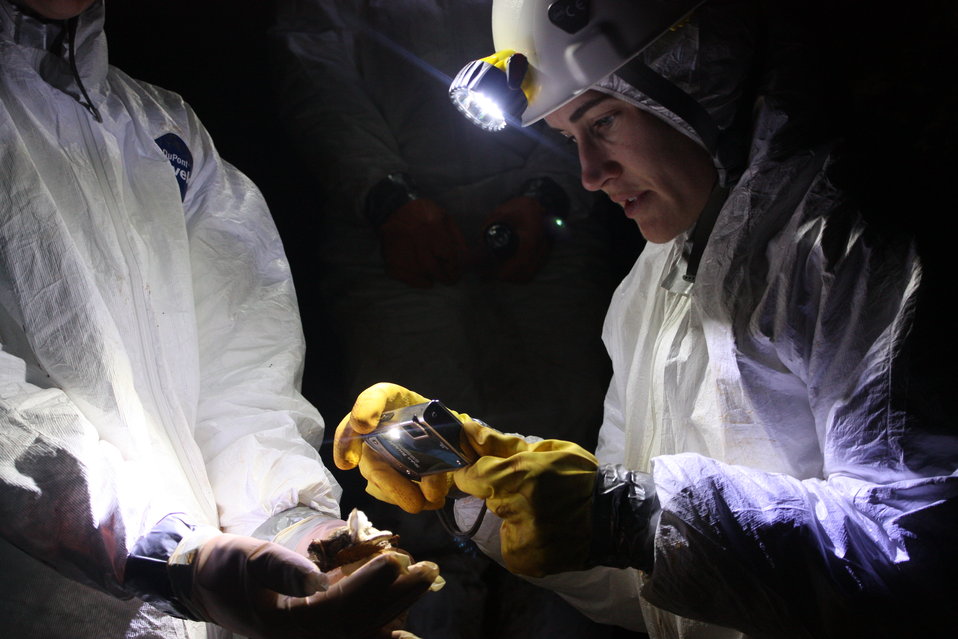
NCWRC biologist Gabrielle Graeter photographing dead bat